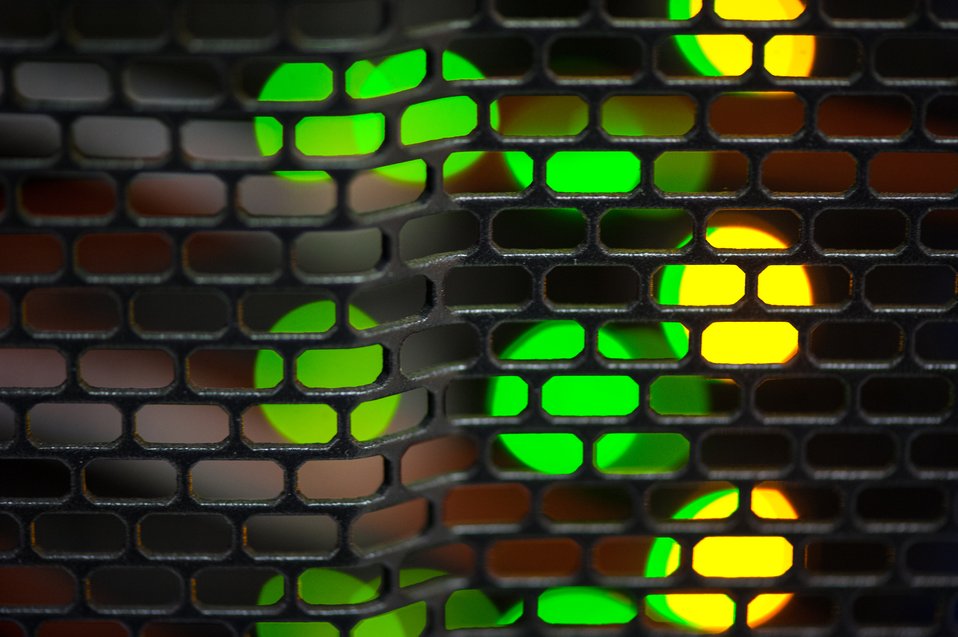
high performance computing (HPC) data center

March 14, 2013 - Detail of wiring in the high performance computing (HPC) data center at NREL's Energy Systems Integration Facility. Initially, the HPC data center will house a petascale computing capability (one million billion calculations per second) and provide room for future systems that enable large-scale modeling and simulation of novel materials, biological and chemical processes, and fully integrated systems that would be too expensive, or even impossible, to study by direct experimentation.